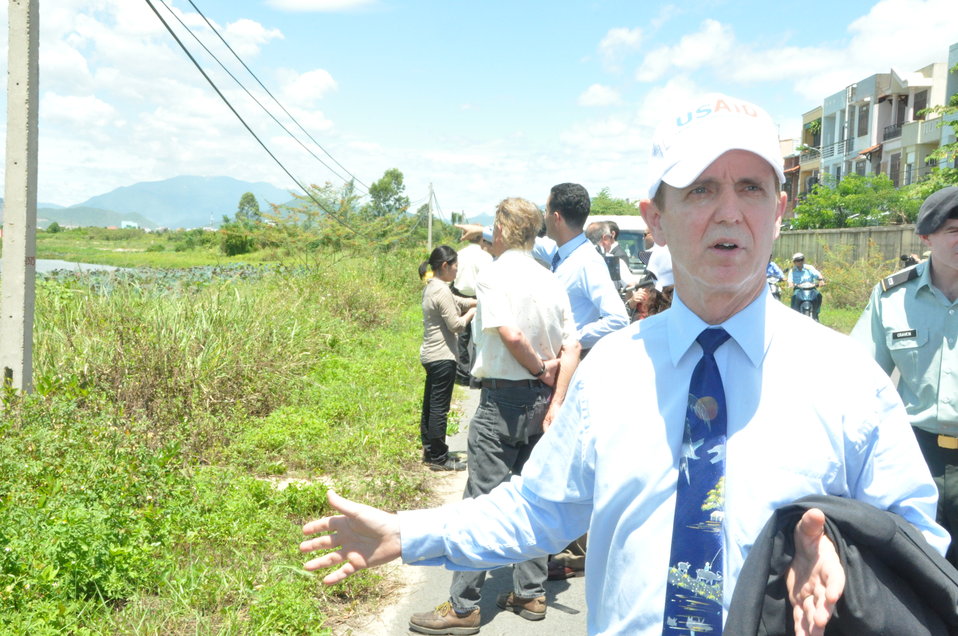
USAID Mission Director Francis Donovan explains the site at the Environmental Remediation of Dioxin Contamination at Danang Airport Project Launch

Danang, August 9, 2012